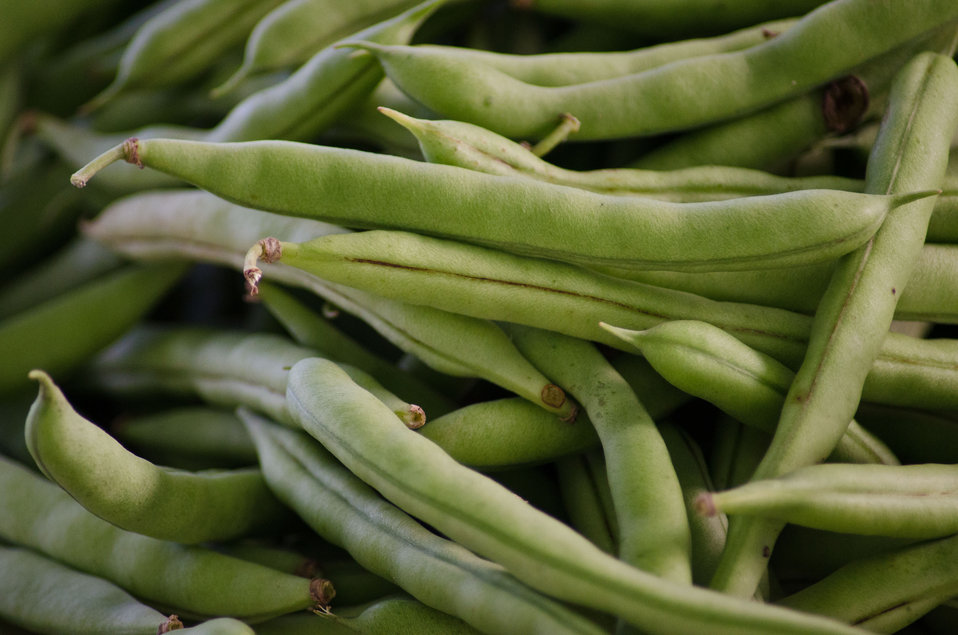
Half Runner heirloom beans sold at the Bath County Agricultural Education and Marketing Center, Owingsville, KY, on Friday, July 15, 2011. The Center was the recipient of a $400,000 Rural Business Enterprise Grant. It has given farmers and producers from Bath and surrounding counties the opportunity to manufacture and market their locally grown and locally produced value-added and “Kentucky Proud” branded products, including but not limited to, fresh produce, artisan crafts and specialty food products. The Center is open year-round and allow residents to sell products in four different retail categories, including Kentucky products, regional crafts, “green” groceries and bakery/deli. Several producers expressed their gratitude for Rural Development’s assistance in making the center a reality. The project was made possible through funding the American Recovery and Reinvestment Act of 2009 enacted by the 111th United States Congress in February 2009 and signed into law on February 17, 2009, by President Barack Obama.